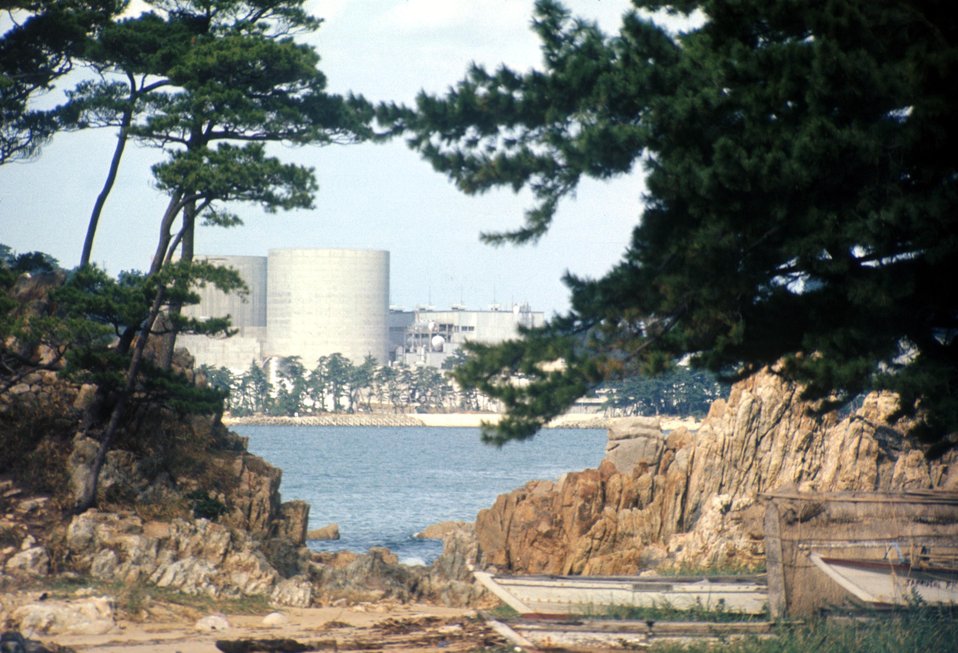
Kansai Plant #1, Mihama, Japan. Kansai Nuclear Reactor.